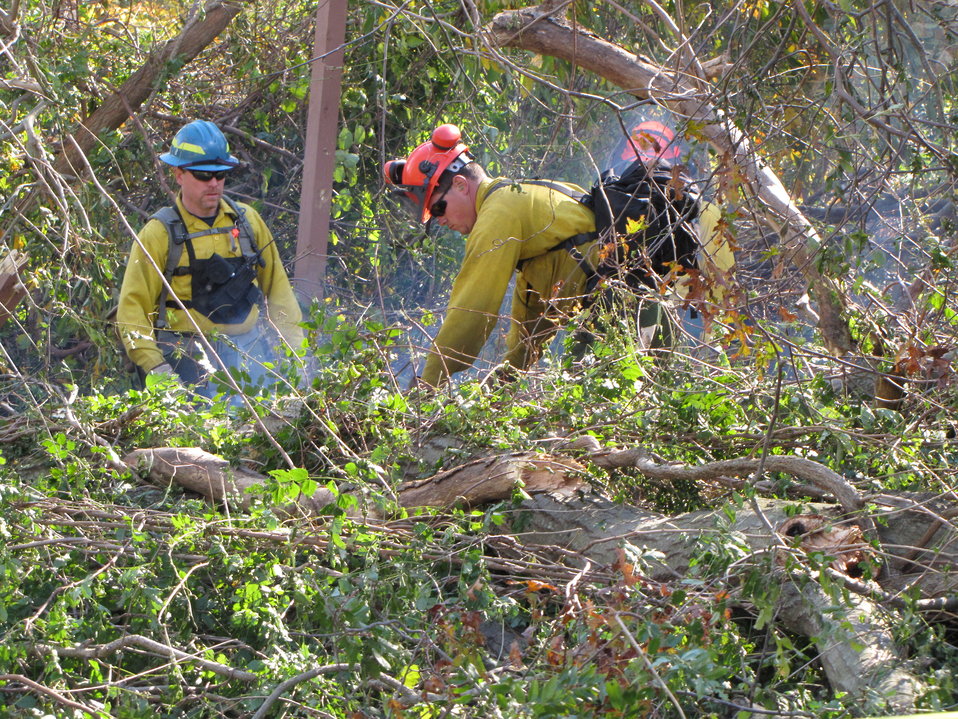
Sawyers working to clear road at Target Rock National Wildlife Refuge (NY)

Crews work diligently to clear the road at Target Rock National Wildlife Refuge, part of the Long Island National Wildlife Refuge Complex.